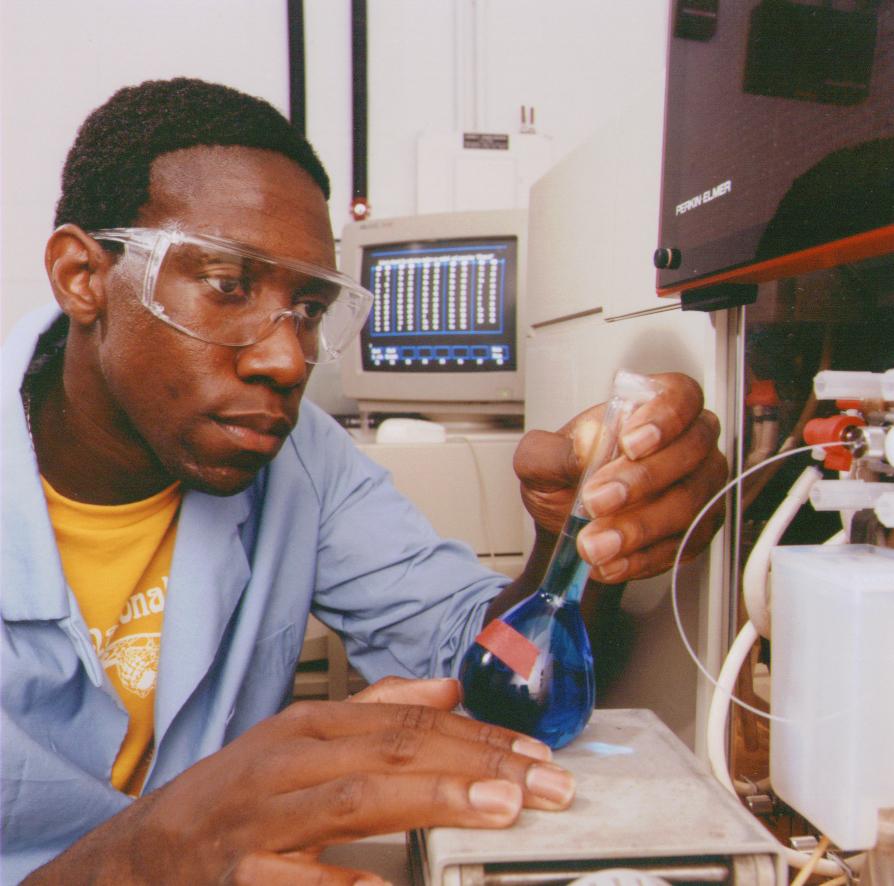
ANL SUMMER INTERN, SENIOR AT UNIVERSITY OF ILLINOIS, EXAMINES A FLASK AT THE FLAME ATOMIC ABSORPTION SPECTRUM.

COLLEGE STUDENTS INTERN AT ARGONNE NATIONAL LABORATORY FOR 10 WEEKS AS PARTICIPANTS IN THE PRE-SERVICE TEACHER PROGRAM. THROUGH THIS PROGRAM, STUDENTS MAJORING IN K-12 SCIENCE, MATHEMATICS AND TECHNOLOGY WORK WITH LABORATORY SCIENTISTS ON PROJECTS IN THEIR CHOSEN FIELD AND LEARN HOW TO TRANSFER THEIR SCIENTIFIC TRAINING INTO LESSON PLANS AND ACTIVITIES.